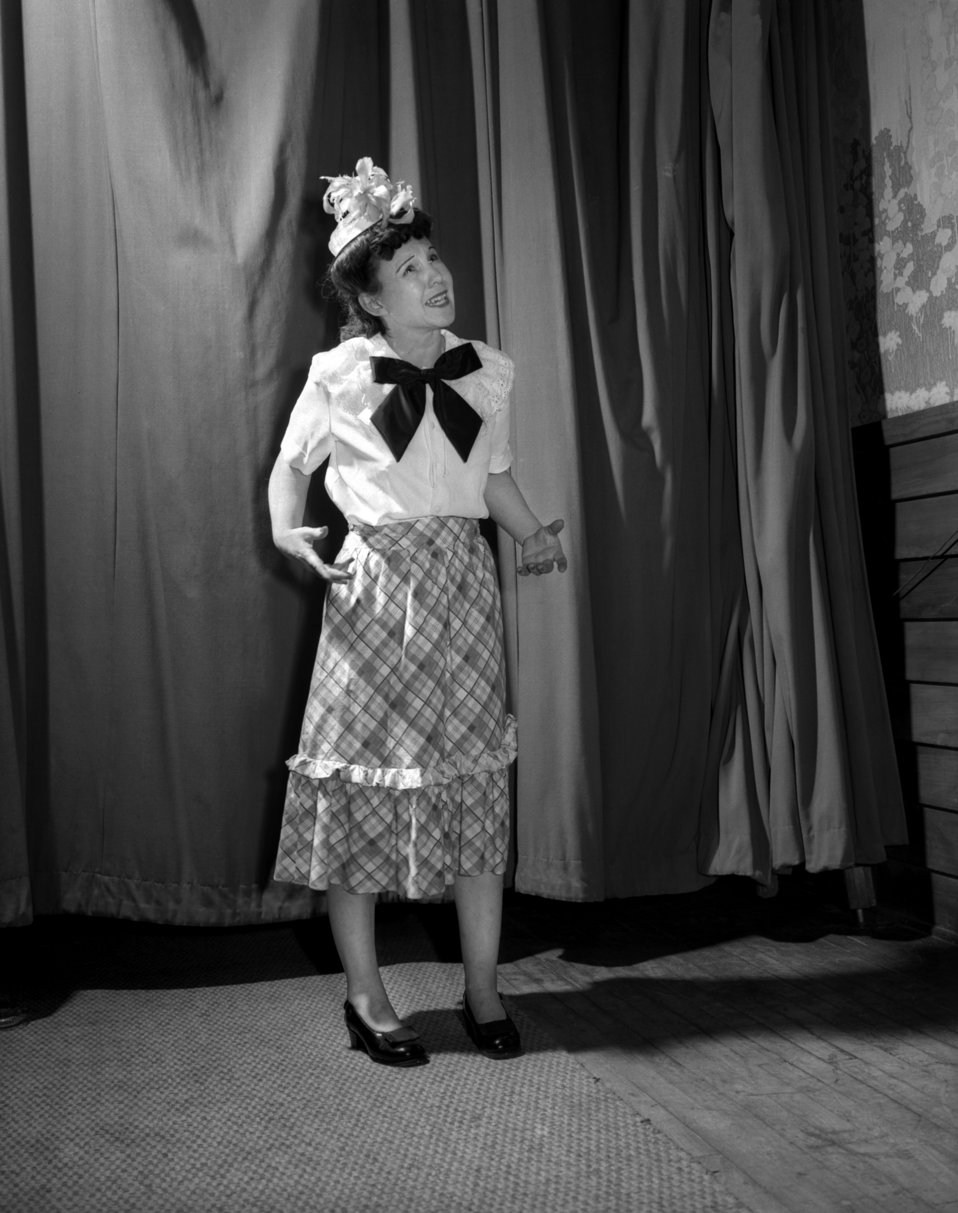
Mrs. James White Allen

3333-1 DOE photo Ed Westcott 3-6-1947 Oak Ridge Tennessee